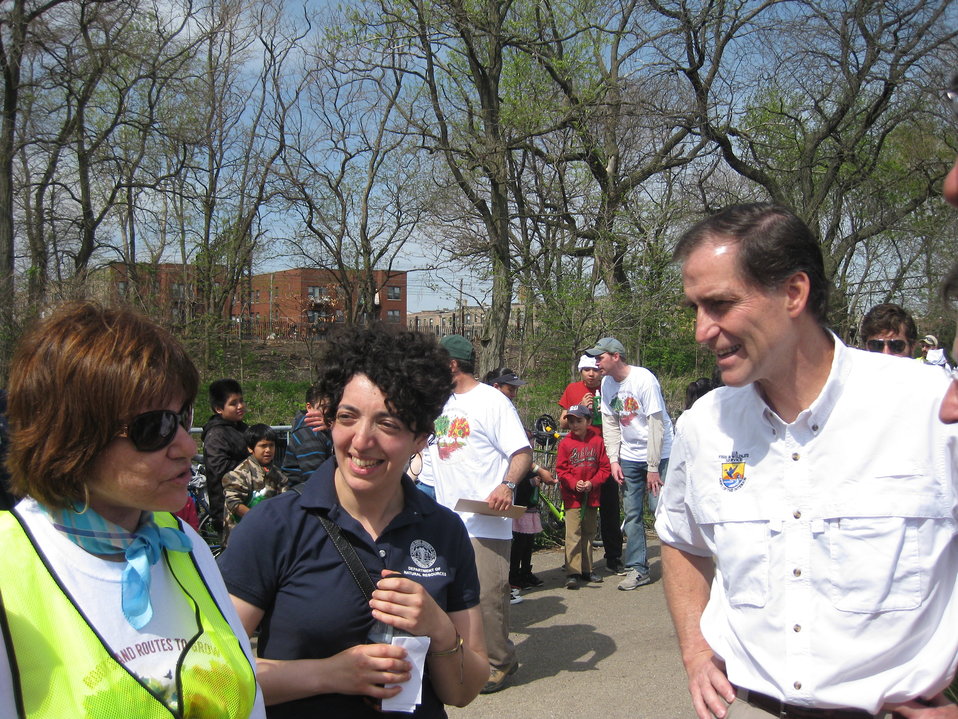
Dan Ashe meets community partners

Chicago Park District Burnham Corridor Community Planting Day
May 10, 2014
Photo by USFWS; Louise Clemency